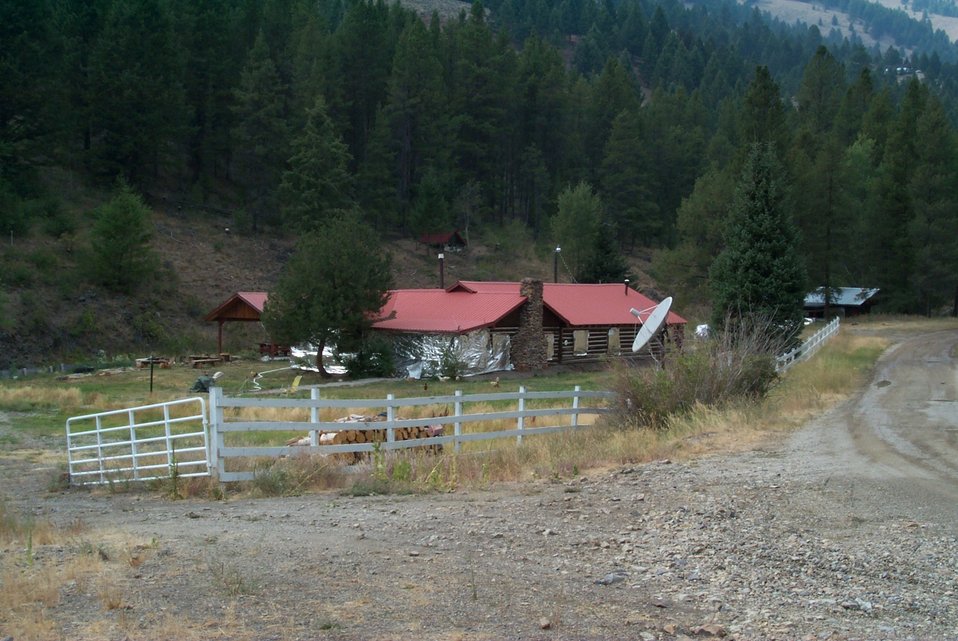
Fire retardant measures Urban interface Fire Clearwater Fire Salmon Field Office USRD Upper Snake River District